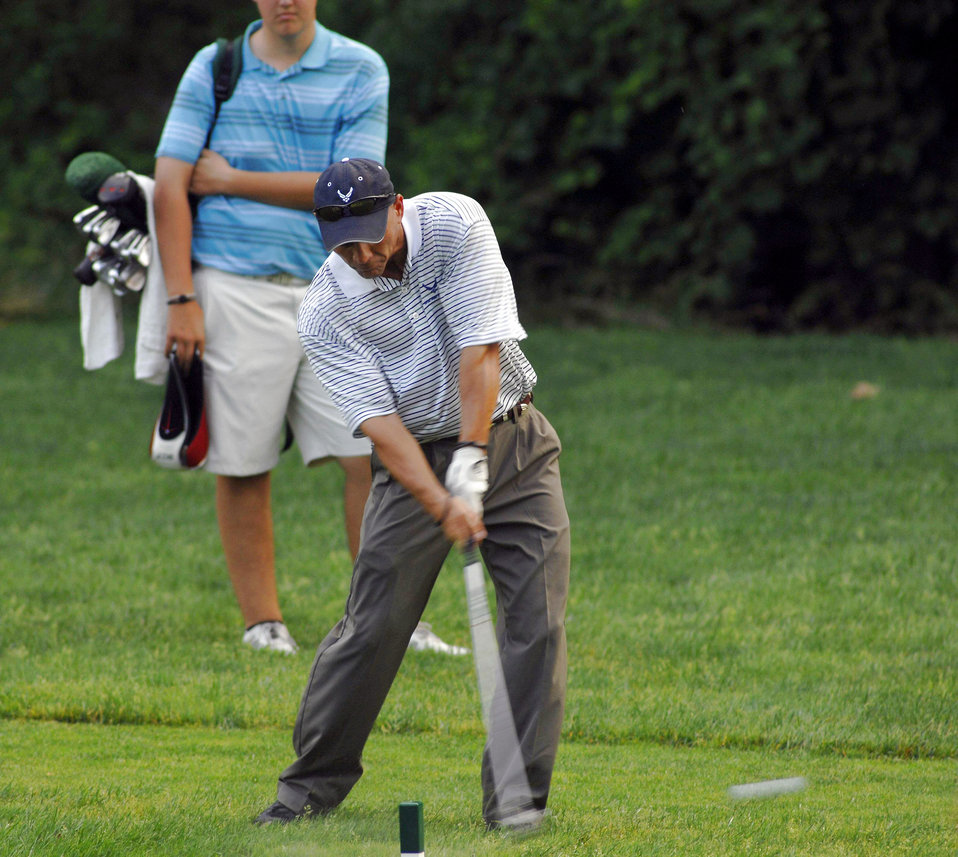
Andrews Airman participates in national golf tournament

Senior Master Sgt. Kirk Kessler drives the ball down range during the 2nd Annual AT&T National Golf Tournament July 2 at the Congressional Country Club in Bethesda, Md. The Tiger Woods Foundation selected Sergeant Kessler to play in the tournament. Sergeant Kessler is assigned to the 316th Civil Engineer Squadron from Andrews Air Force Base, Md.